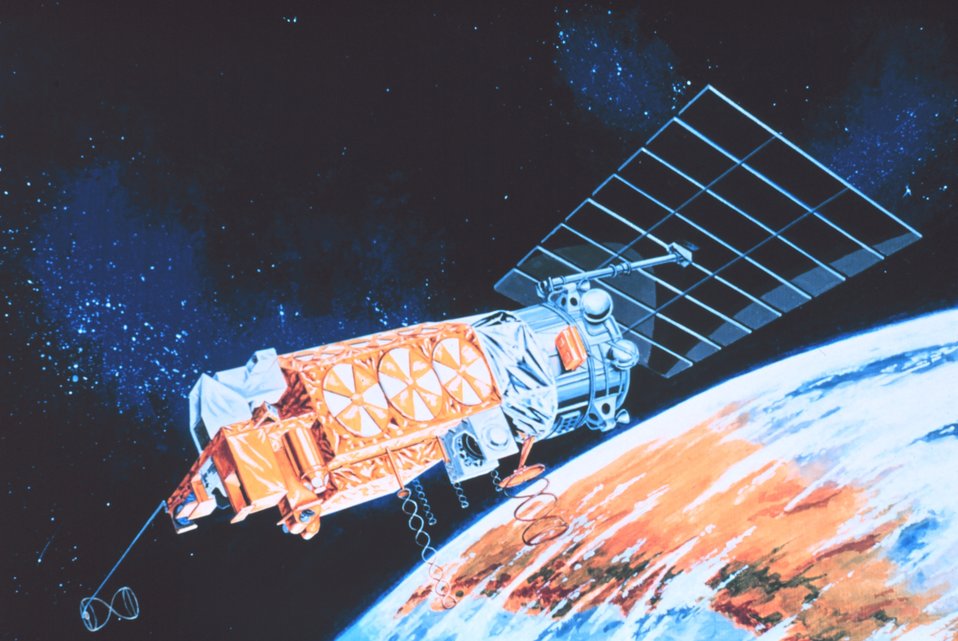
Graphic of TIROS-N satellite in orbit.